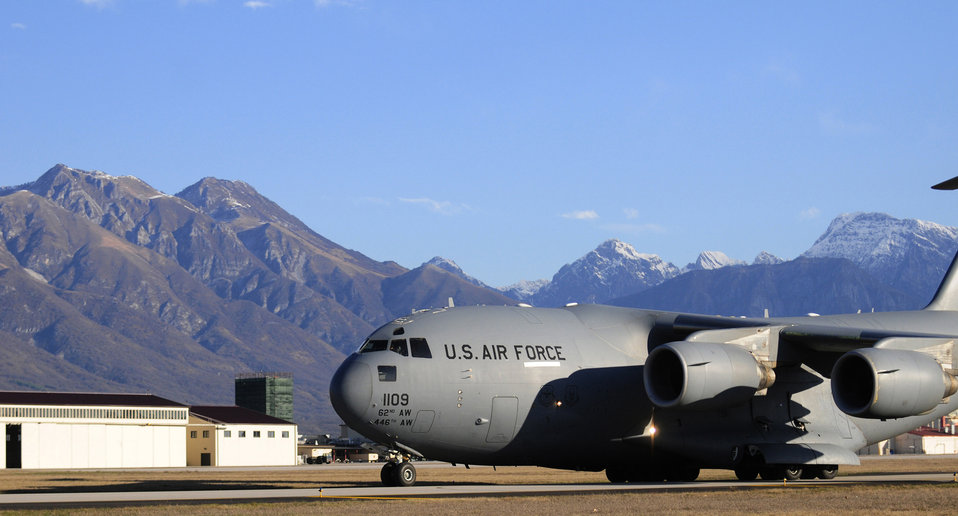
Odyssey Dawn

A U.S. Air Force C-17 Globemaster III from McChord Air Force Base, Wash., lands at Aviano Air Base, Italy, in support of Operation Odyssey Dawn March 20, 2011. Joint Task Force Odyssey Dawn is the U.S. Africa Command task force established to support the larger international response to the unrest in Libya. A broad coalition of nations are partnering to enforce U.N. Security Council Resolution (UNSCR) 1973, which authorizes all necessary means to protect civilians in Libya under threat of attack by Qadhafi regime forces. JTF Odyssey Dawn is commanded by Admiral Samuel J. Locklear, III.